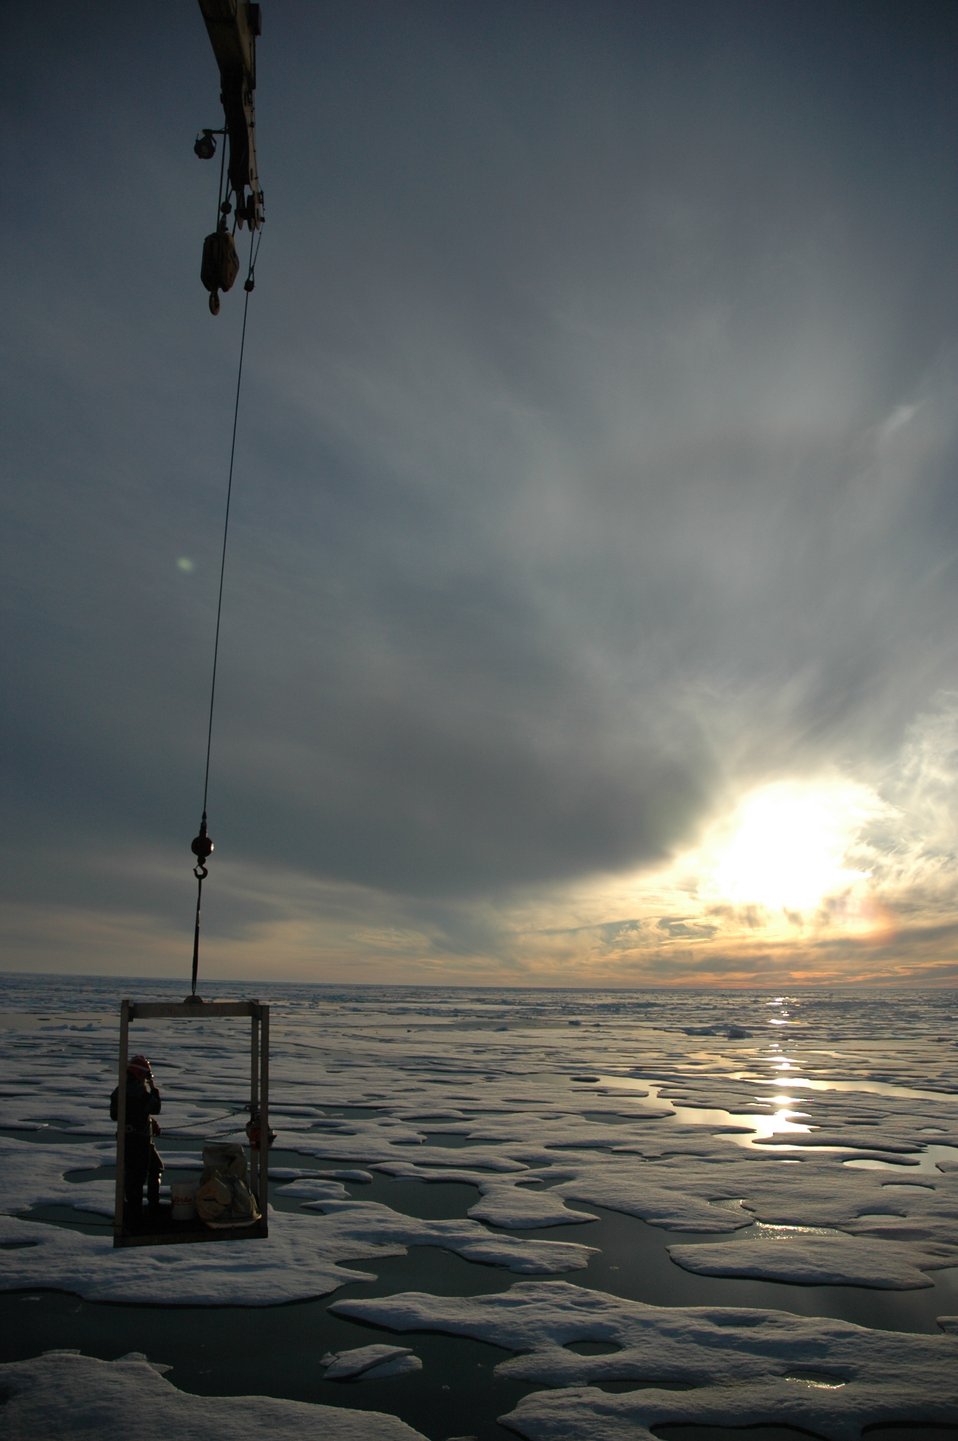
Transportation off the ship as a scientist is being transported to the ice surface from the USCG Icebreaker HEALY under the midnight sun.